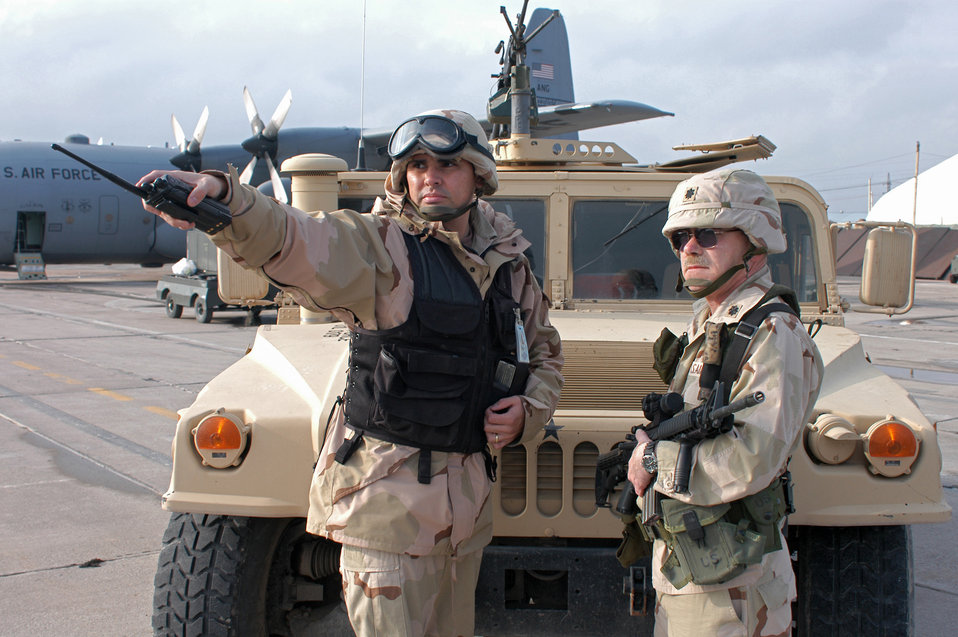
Airman's role brings career full circle

KARSHI-KHANABAD AIR BASE, Uzbekistan -- Staff Sgt. Robert Polanco shows Lt. Col. Donald Klinko areas where the security forces are guarding the flightline. Sergeant Polanco is assigned to 416th Expeditionary Mission Support Squadron's security forces flight. Colonel Klinko is the squadron's commander.